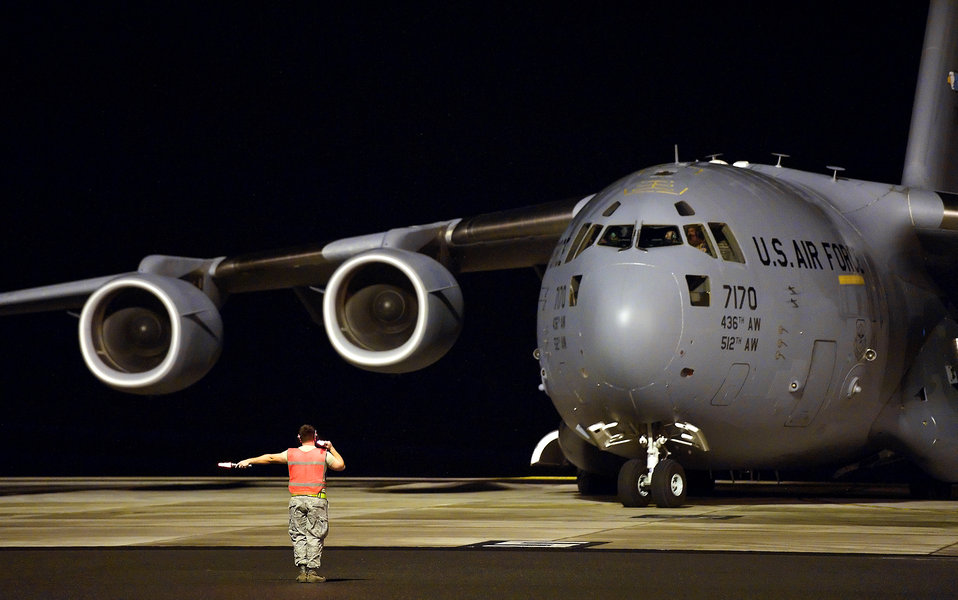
Roll out

Aircraft maintenance personnel marshal out the last C-17 Globemaster III prior to the arrival of Hurricane Irene on Aug. 26, 2011, at Dover Air Force Base, Del. In preparing for the hurricane, base officials evacuated not only the aircraft, but also parts of base housing in anticipation of flooding.